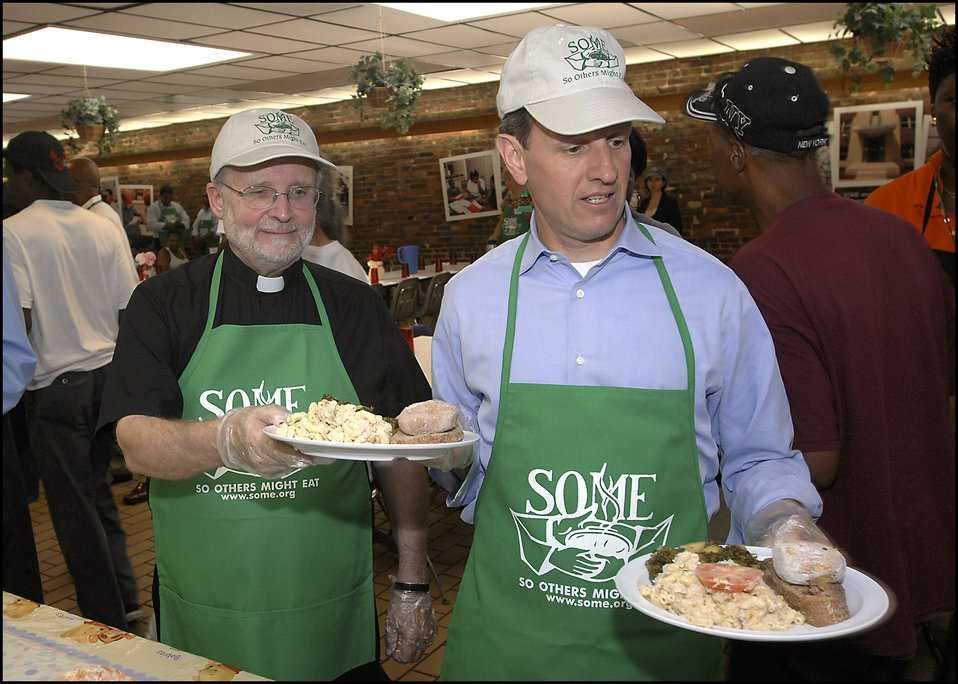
United We Serve at SOME: June 25, 2009

Secretary Geithner and Father John Adams, President of So Others Might Eat (SOME), serving food to Washington DC’s hungry and homeless, as part of the Obama Administration’s “United We Serve” summer service initiative on June 25, 2009.